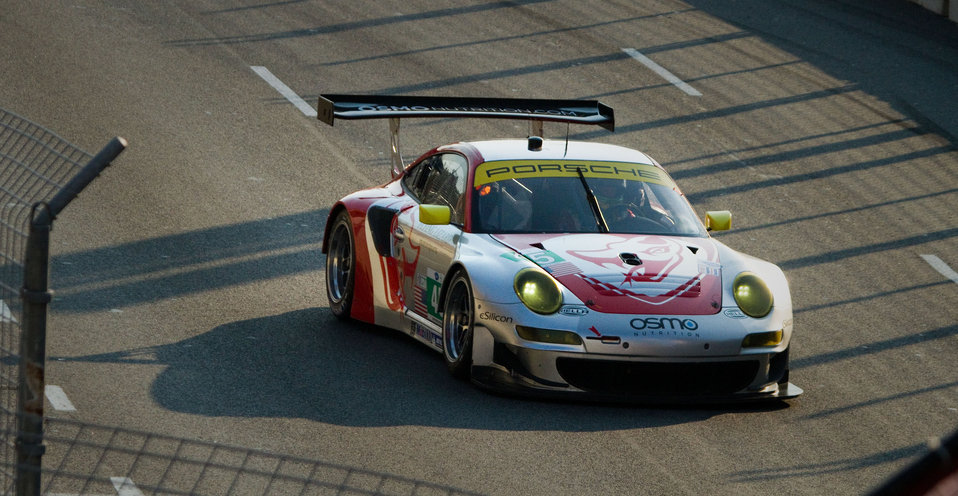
The Number 45, Porsche GT3 911 RSR of the Flying Lizard Motorsports Team, uses E85 fuel for the American Le Mans Series (ALMS) motorsport series at the Baltimore Grand Prix, on the streets of downtown Baltimore, MD, on Friday, August 31, 2012, Labor Day Weekend. ALMS says they are “the Global Leader in Green Racing by being the only racing series recognized to comply with the Green Racing protocols developed by the U.S. Department of Energy (DOE), the U.S. Environmental Protection Agency (EPA) and Society of American Engineers International (SAE).” Instead of high-octane gasoline all the cars in the series use one of 5 different forms of energy (system). Clean diesel, E85, E10, isobutanol or hybrid energy technology. The specific hybrid system, used by the Porsche GT3 cars, are a (battery-less) flywheel-based Kinetic Energy Recovery Systems. These organizations are accelerating technology development at speeds up to 200 mph, in 650-700 horsepower race cars that are based on two groups of cars; the purpose built prototype race cars and the GT
(Grand Touring) cars based on production sports cars that you can see in showrooms. From these groups, there are five classes of cars, all of which race at the same time during the race events.
The U.S. Department of Agriculture (USDA) focuses on renewable fuel sources that are profitable and sustainable. 2011 accomplishments include research and planning for renewable energy and investments in renewable energy production.
- Completed a Biofuels Roadmap proposing a plan of action to meet congressionally mandated RFS2 goals for national biofuels production.
-Coordinated five regional research centers to work on the science necessary to ensure profitable biofuels can be produced from a diverse range of feed stocks across the nation, not just in the Midwest where the industry is already thriving.
-Over three years, USDA invested about $320 million to accelerate research on renewable energy ranging from genomic research on bioenergy feedstock crops, to development of biofuel conversion processes and costs/benefit estimates of renewable energy production.
- More than 130 biodiesel and ethanol projects funded by USDA are currently producing almost 3.7 billion gallons of biodiesel and ethanol annually, enough fuel – in equivalence to gasoline – to keep five million vehicles on the road every year.
-We are supporting efforts to build five biorefineries to produce advanced biofuels in states from Florida and Michigan to New Mexico, with investments worth about $310 million. We are supporting facility upgrades and feasibility studies for advanced biofuels projects in every region of the country.